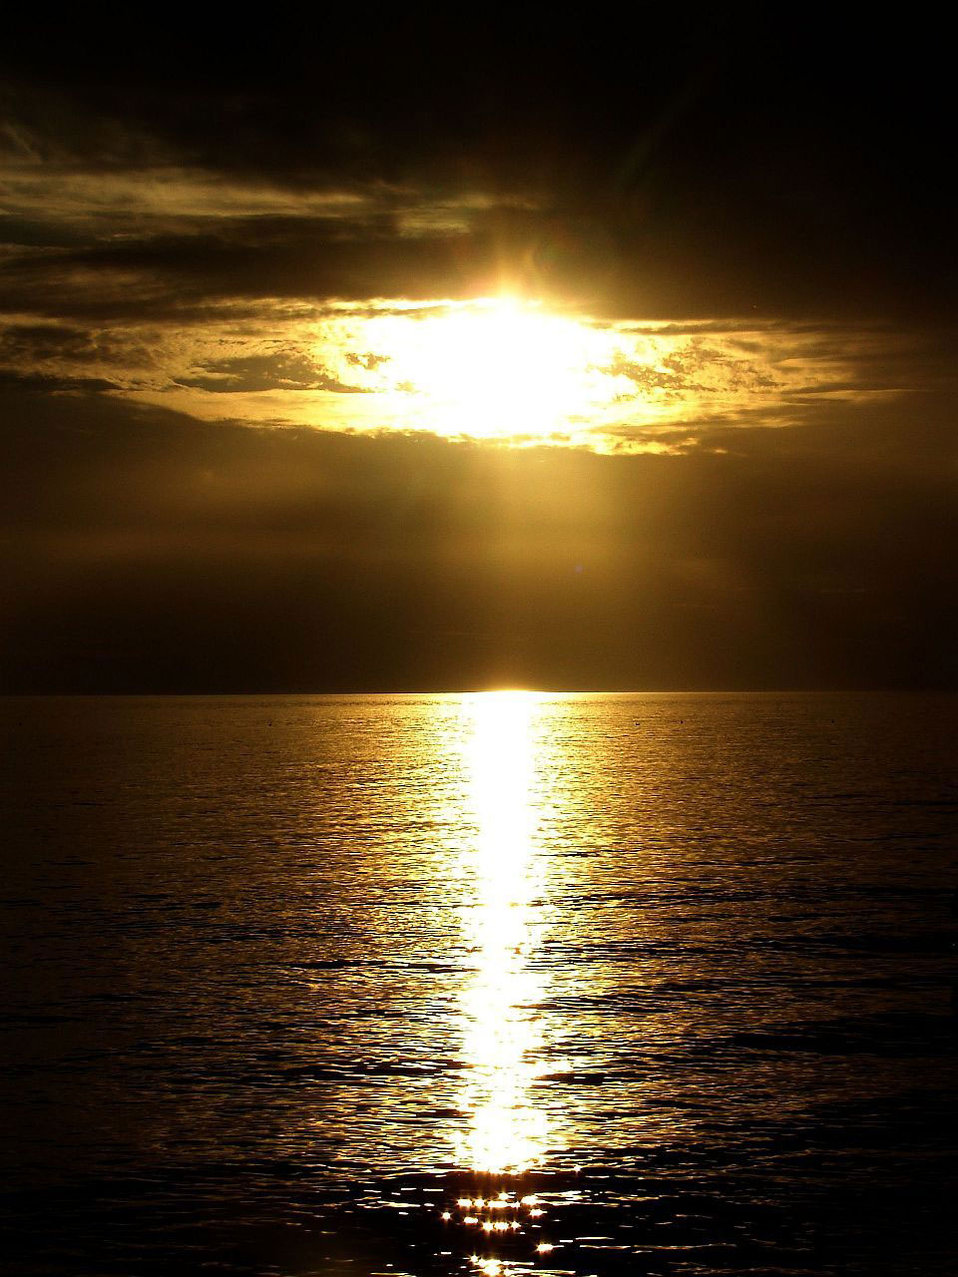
Silence before storm

Sunbeam on the ocean.